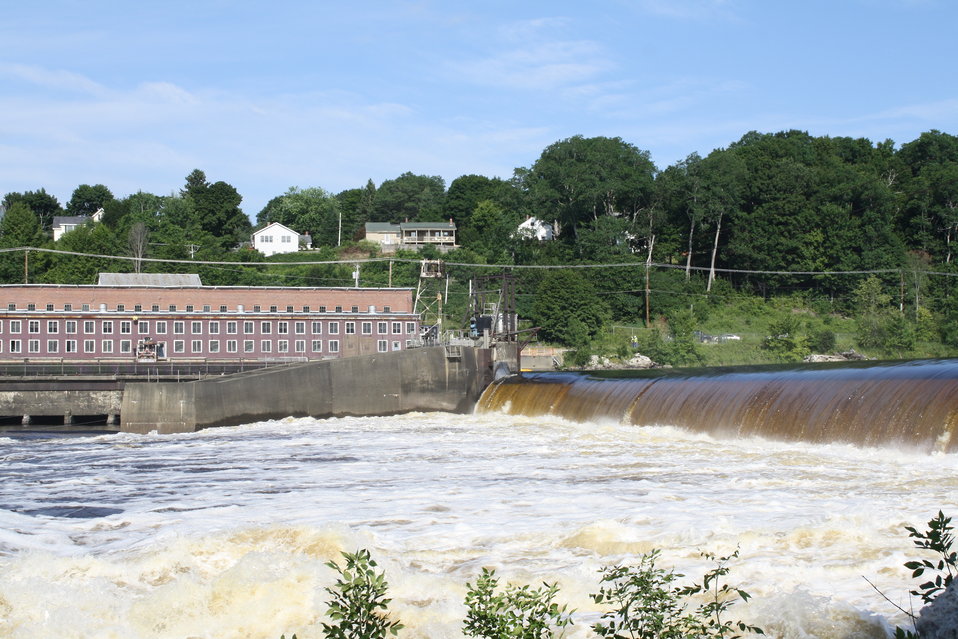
Veazie Dam Removal

The site has two powerhouse buildings and structures related to the collection of Atlantic salmon brood stock. The smaller of the powerhouse buildings has already been demolished. The larger powerhouse building, 'Powerhouse A' is being considered for possible reuse.